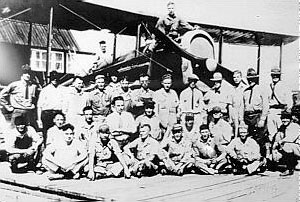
Transcontinental Flight

The first transcontinental flight across the United States within a 24-hour period was made by Lt. Jimmy Doolittle on Sept. 4, 1922.